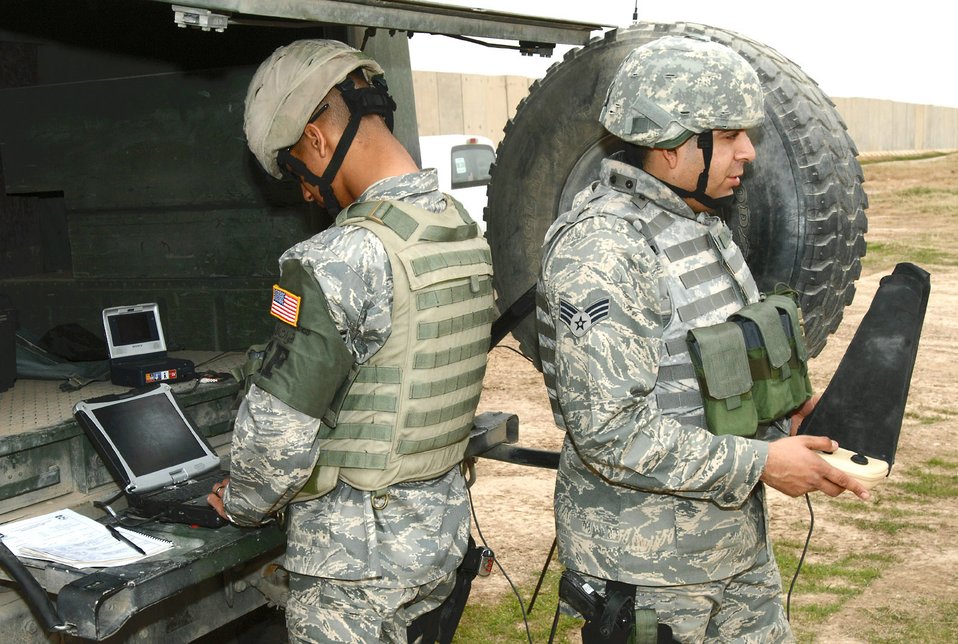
UAVs aid force protection efforts

Airman 1st Class Melvin Silva (left) and Senior Airman Jacob Galindo, 506th Expeditionary Security Forces Squadron Raven operators, work together to view images transmitted from an RQ-11 Raven during a recent mission here. Despite weighing in at less than five pounds, this unmanned aerial vehicle plays a vital role in securing the base and surrounding neighborhoods. Airmen Silva and Galindo are 506th Expeditionary Security Forces Squadron Raven operators.